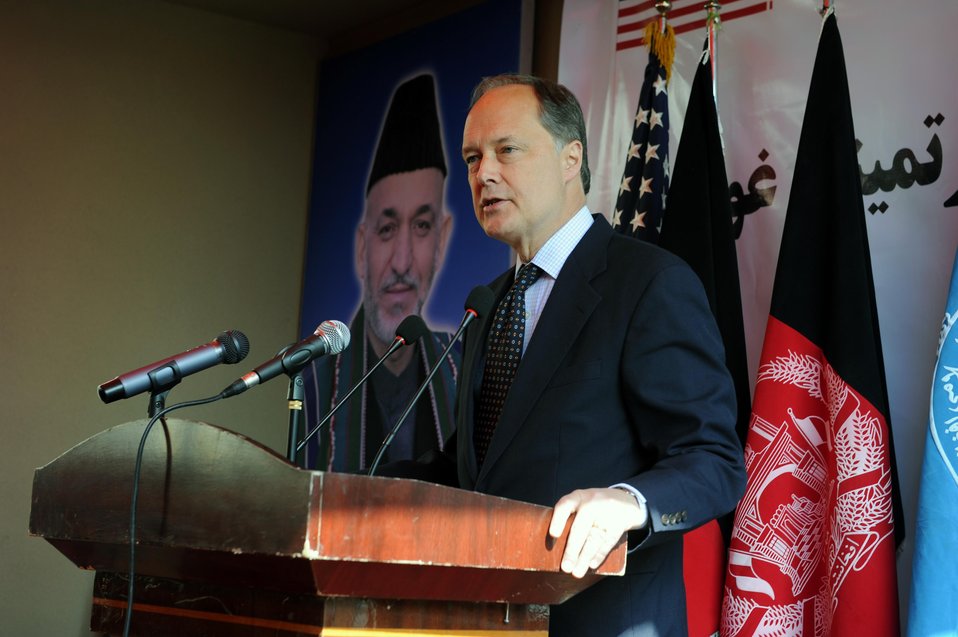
U.S. Deputy Ambassador gives remarks at the inauguration of the Ghazi School.

U.S. Deputy Ambassador to Afghanistan James B. Cunningham, Afghan Minister of Education Abdul Rahim Wardak and visitng former U.S. Ambassador to Afghanistan Zalmai Khalilzad officially inaugurated the newly rebuilt Ghazi High School in West Kabul October 23, 2011. Former alumni of the school include both Ambassador Khalilzad and Afghan President Hamid Karzai. The school was destroyed during 30 years of fighting in Afghanistan, and was refurbished by the U.S. Agency for International Development. (Department of State)